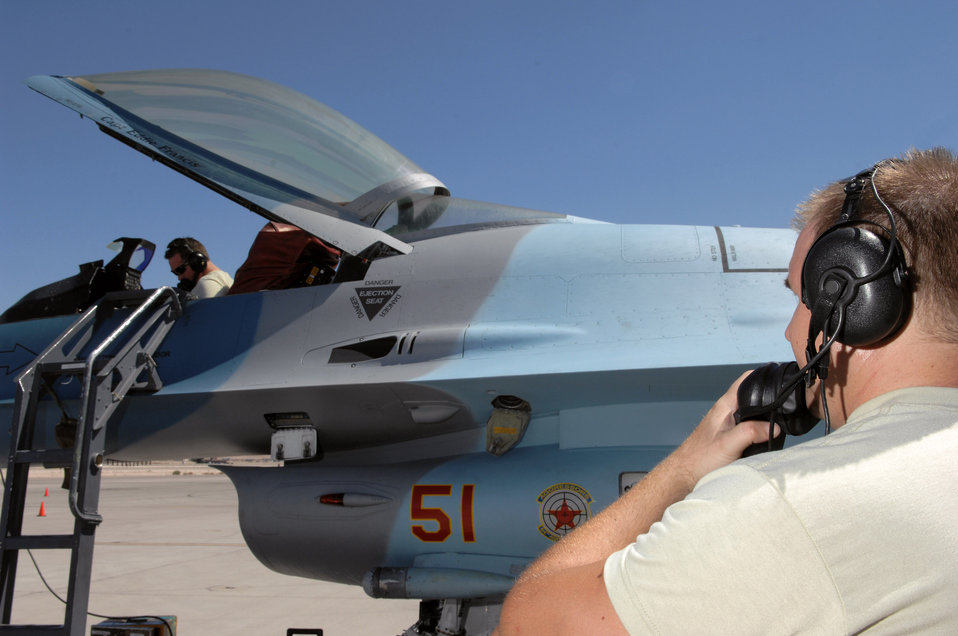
Teamwork

Senior Airman Shawn Ohagan (left) Staff Sgt. Giovanni Conti conduct a radar functional check on an F-16 July 24 at Nellis Air Force Base, Nev. The 926th Group is an Air Force Reserve unit under the 10th Air Force, Naval Air Station Joint Reserve Base, Fort Worth, Texas. The group is located at Nellis AFB as an associate unit to the Air Force Warfare Center. Through total force integration, reservists are integrated into active duty Air Force units, accomplishing the mission alongside active-duty Airmen on a daily basis. Both Airmen are F-16 avionics specialist assigned to the 926th Group Det. 2.